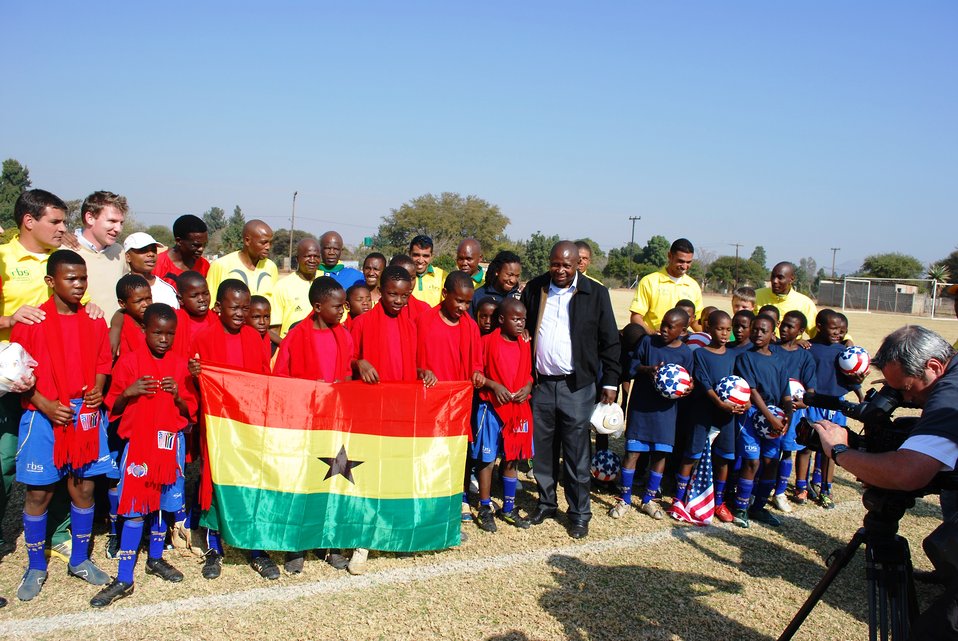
U-11 Bafokeng Football Academy Teams Preview 2010 World Cup Match Between U.S. and Ghana

Two Under-11 Bafokeng Football Academy teams preview the FIFA 2010 World Cup match between the United States and Ghana by playing each other as the “U.S.” and Ghana” on June 25, 2010, in Rustenburg, South Africa. The game highlighted the development of rural soccer in South Africa, particularly in the Royal Bafokeng Nation, which consists of twenty-nine villages located in the Rustenburg Valley in the North West Province.